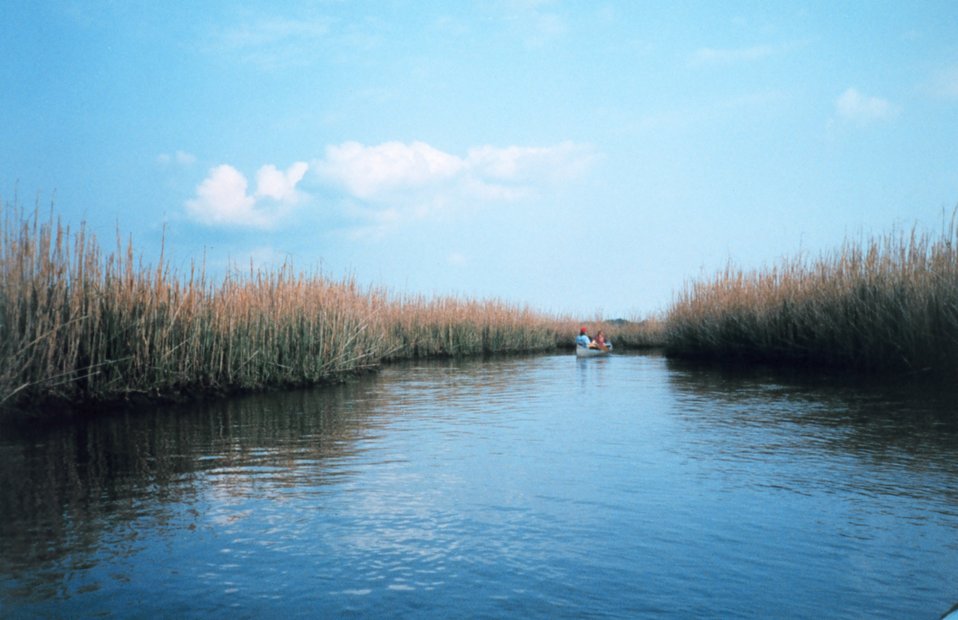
Canoeists exploring a marsh